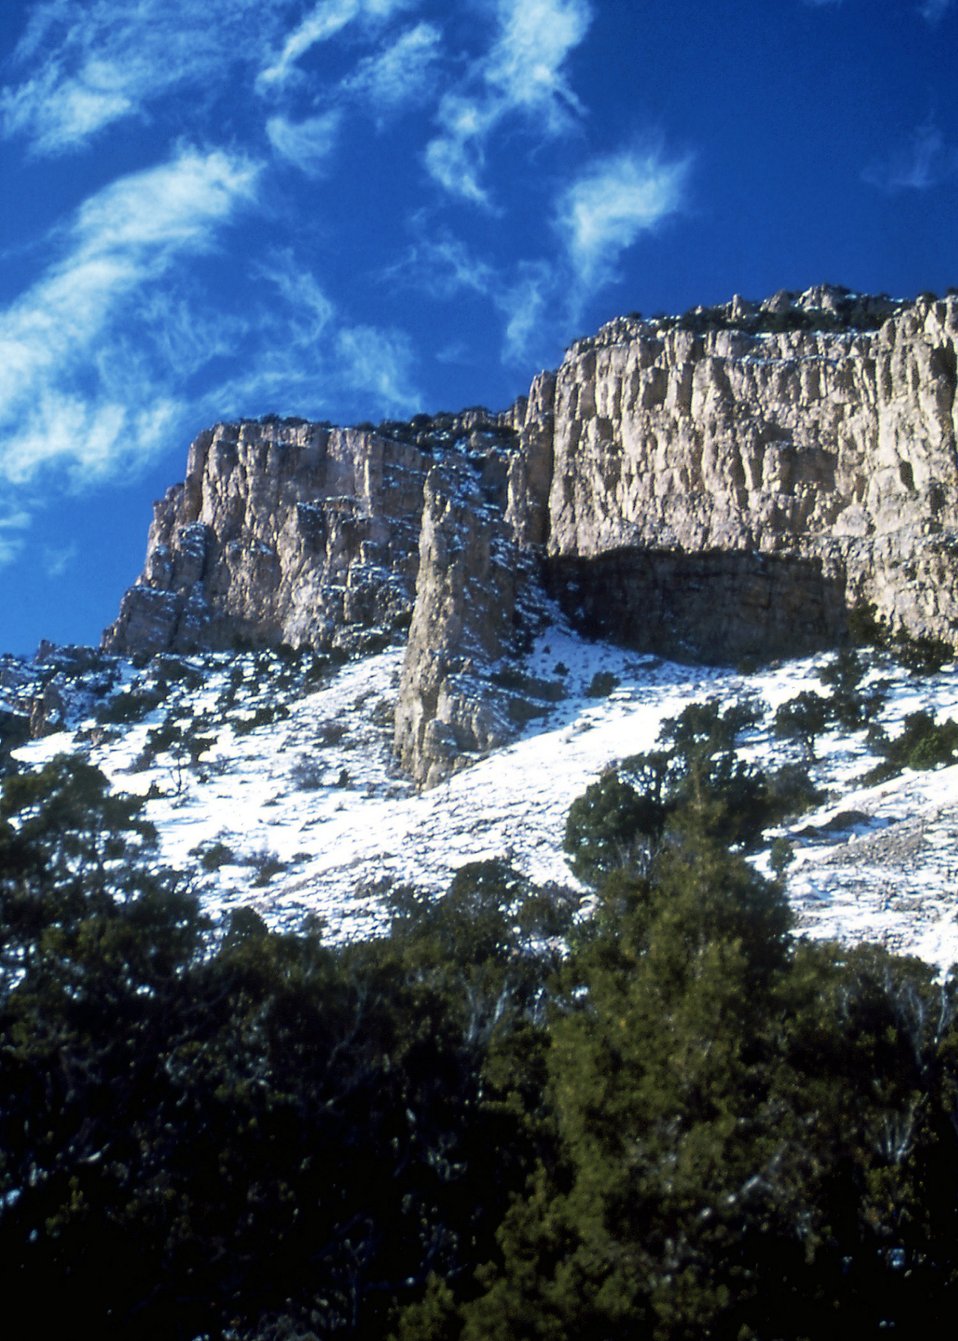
Mountian Cliff Senic